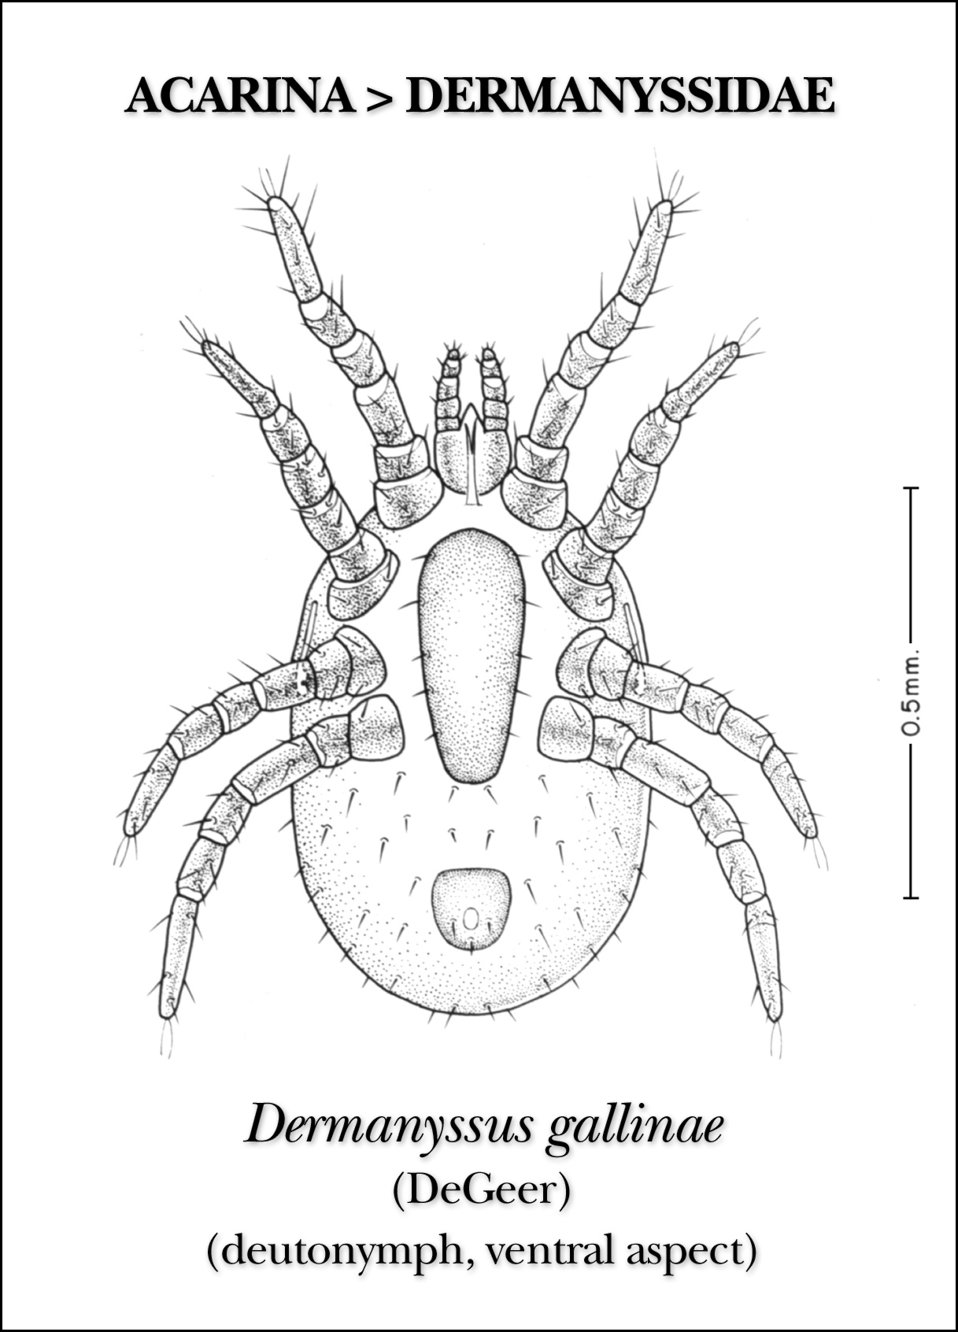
This illustration depicts the ventral aspect of a female Dermanyssus gallinae mite during its deutonymph stage of development.